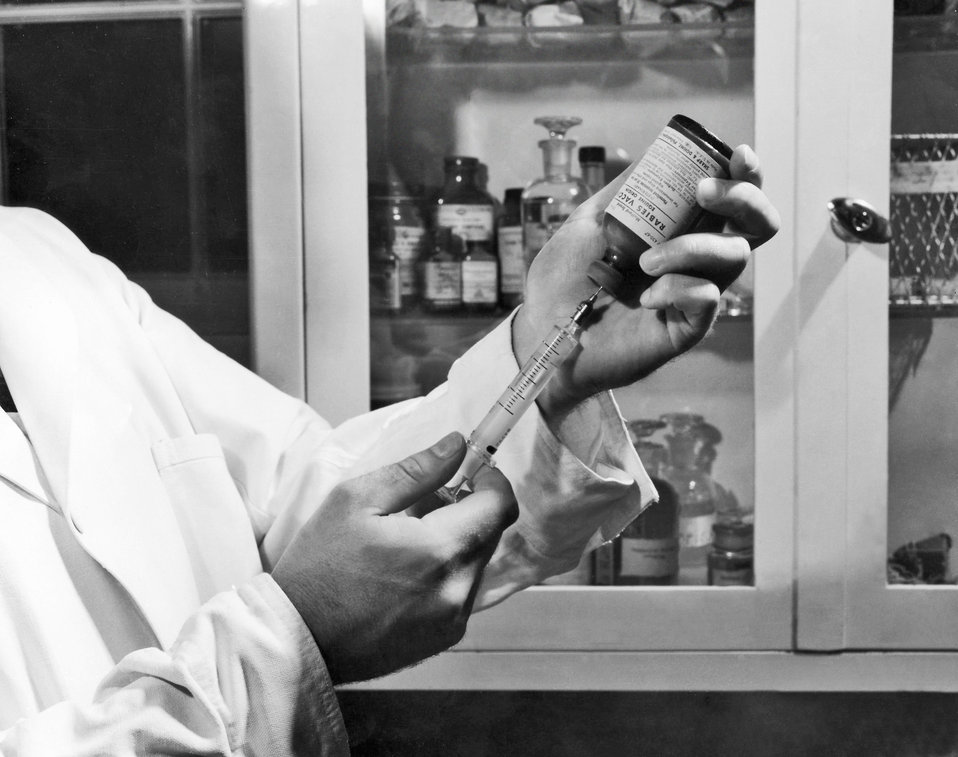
This photograph shows a Centers for Disease Control laboratorian as he was filling a syringe with rabies vaccine that had been obtained from the Alabama State Board of Health located in Montgomery, Alabama.